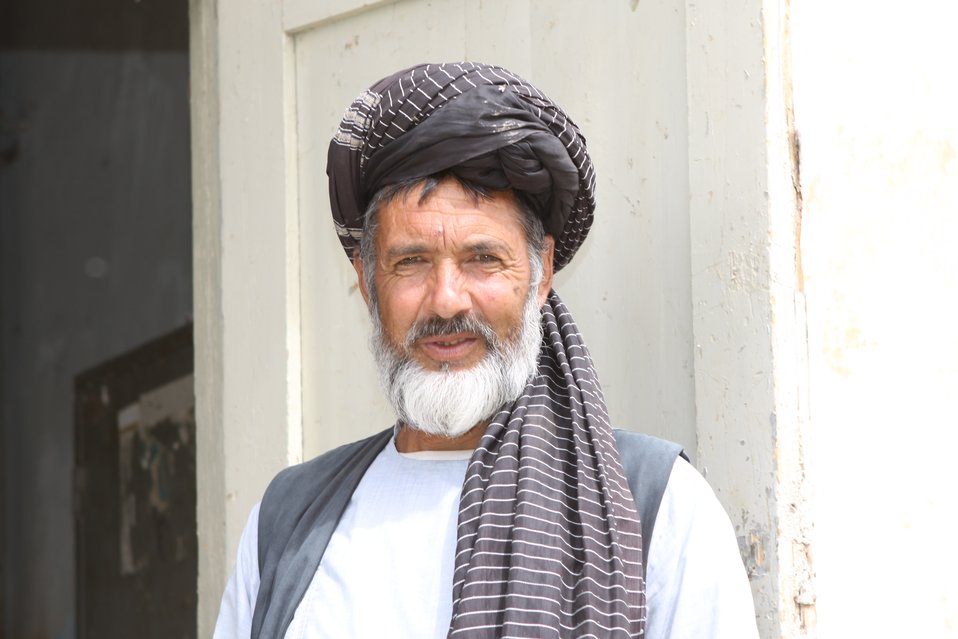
100525 Hirat Textile Company 726